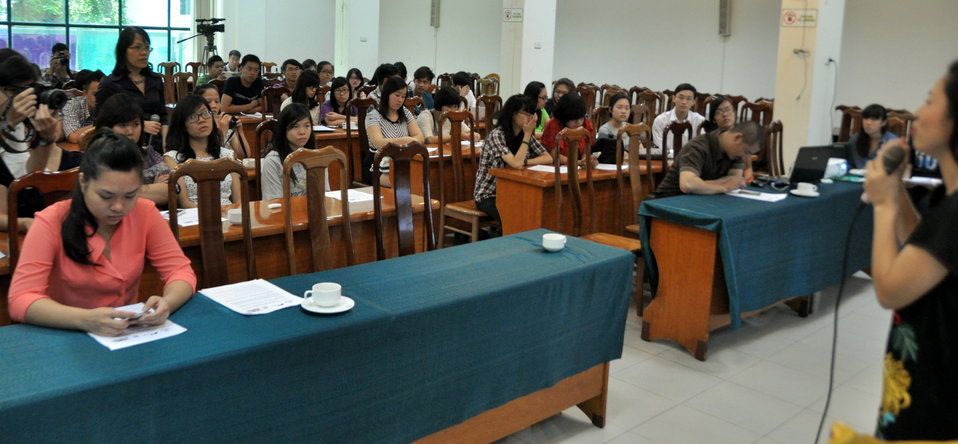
USAID supports scriptwriting contest for students in Hanoi to boost intellectual property rights awareness